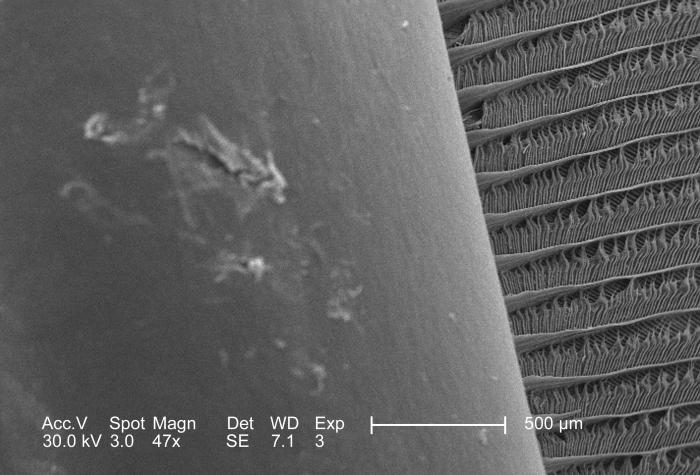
This scanning electron micrograph (SEM), at a low level magnification of 47x, depicted the strut-like configuration of an unidentified bird feather found on the ground in the Decatur, Georgia suburbs.